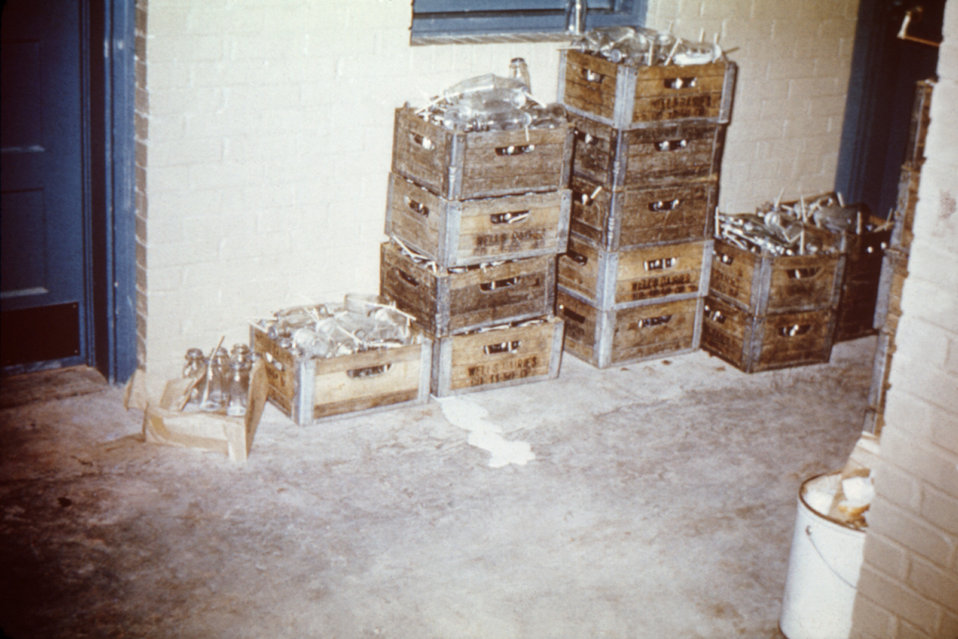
These crates of open milk bottles stored in a migrant workers' camp are shown in violation of health inspection codes.